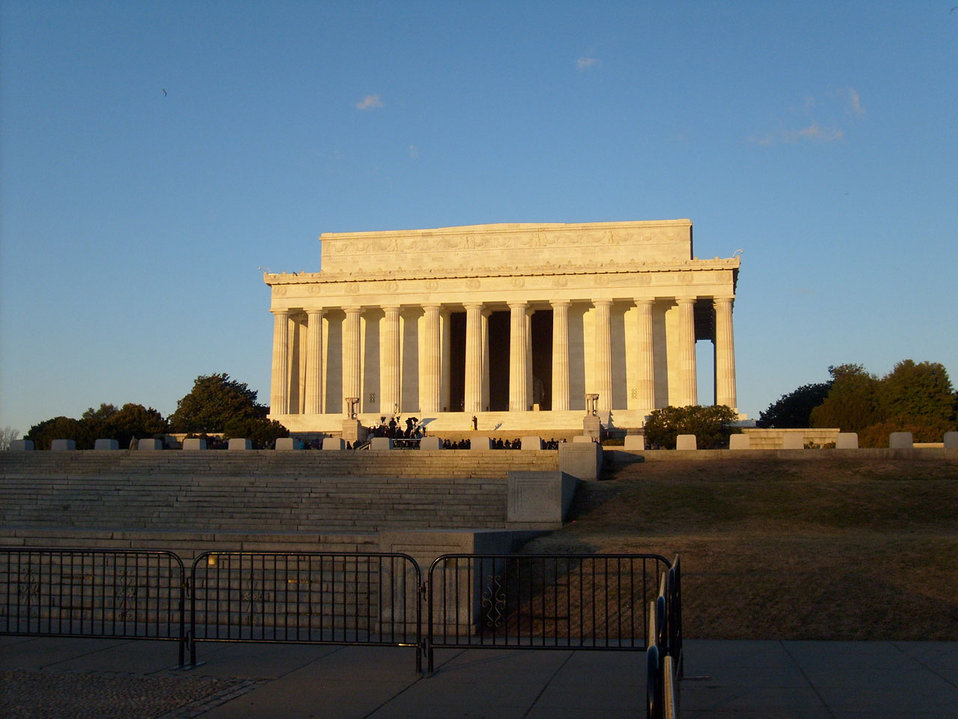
Lincoln memorial.